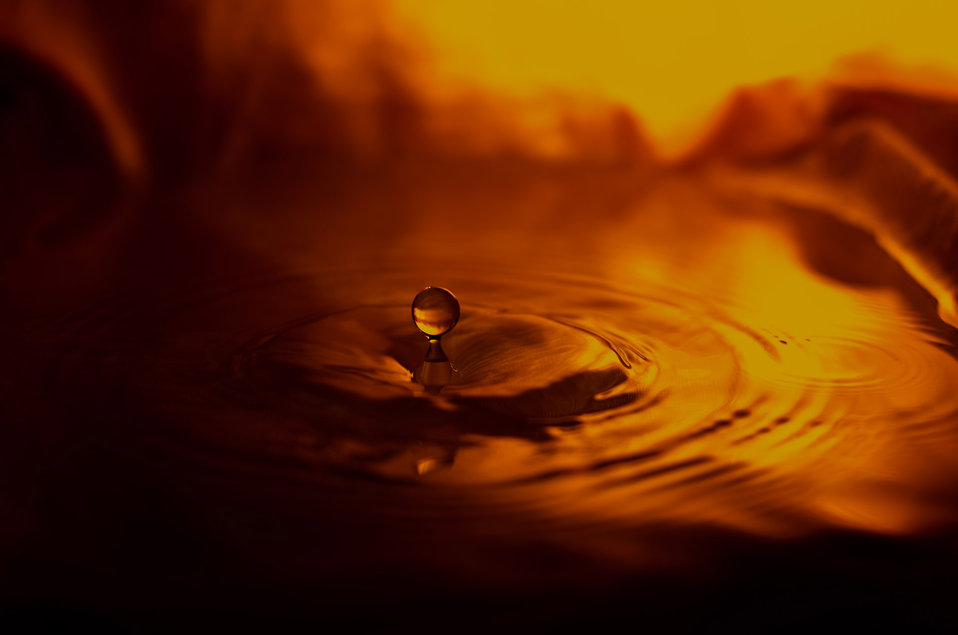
Splash 1

The drop on its way up..